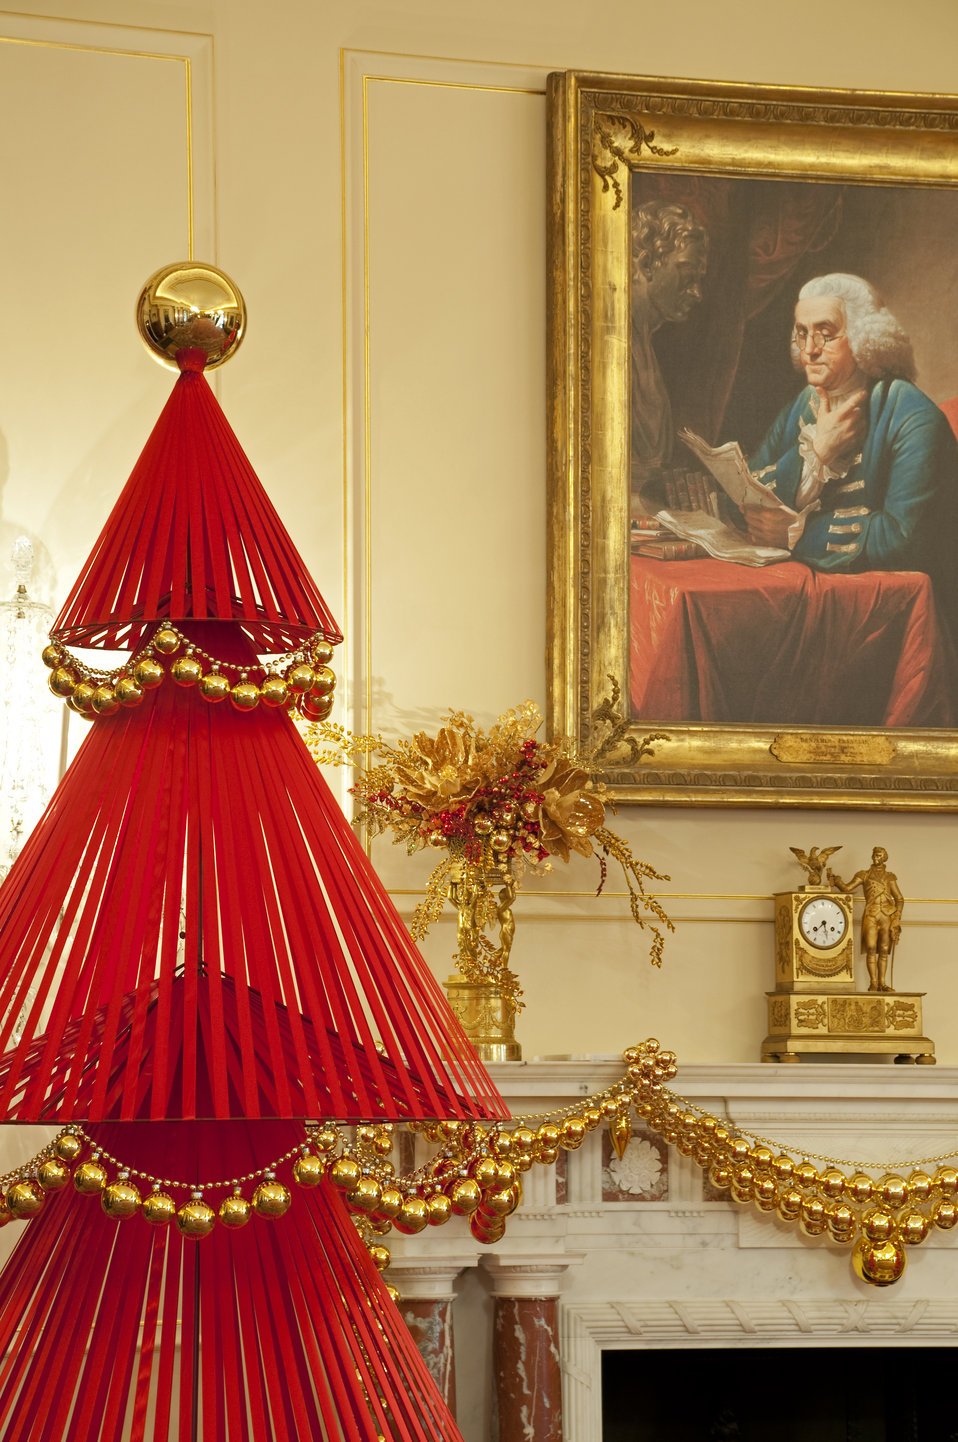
The U.S. Department of State Partners With Time Inc. and InStyle To Decorate the Benjamin Franklin State Dining Room

The U.S. Department of State partners with Time Inc. and InStyle to decorate the Diplomatic Reception Rooms for the Holidays in December 2010. Pictured in this photo is the Benjamin Franklin State Dining Room.